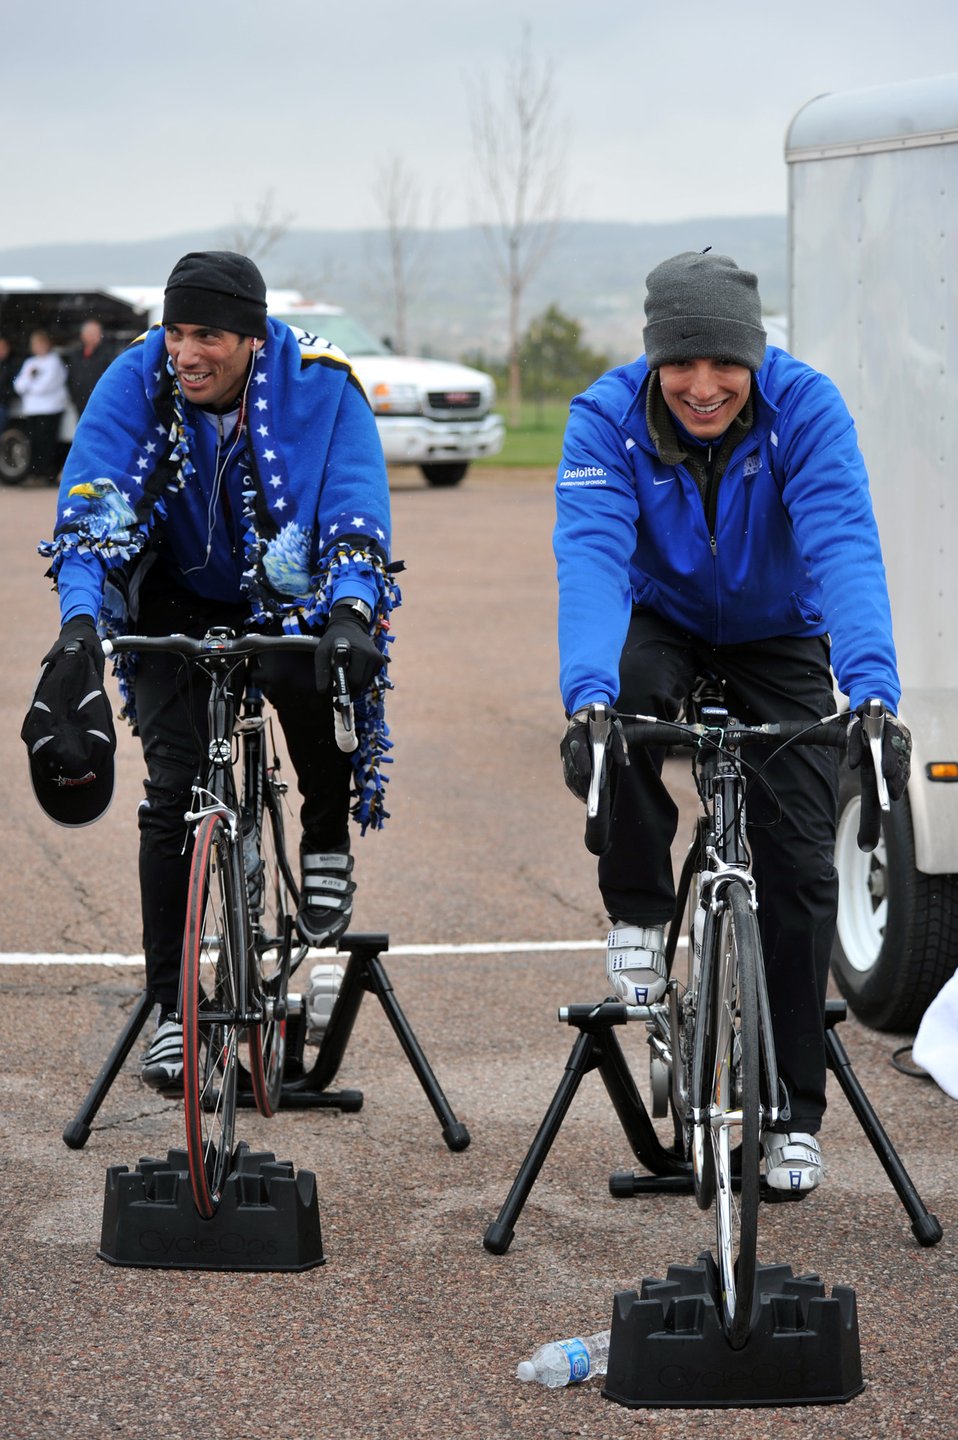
Warrior Games AF Cycling

Staff Sgt. Marc Esposito and Adam Tanverdi warm up before competing in the 20-kilometer upright bike race for the inaugural Warrior Games May 13, 2010, at the U.S. Air Force Academy in Colorado Springs, Colo.